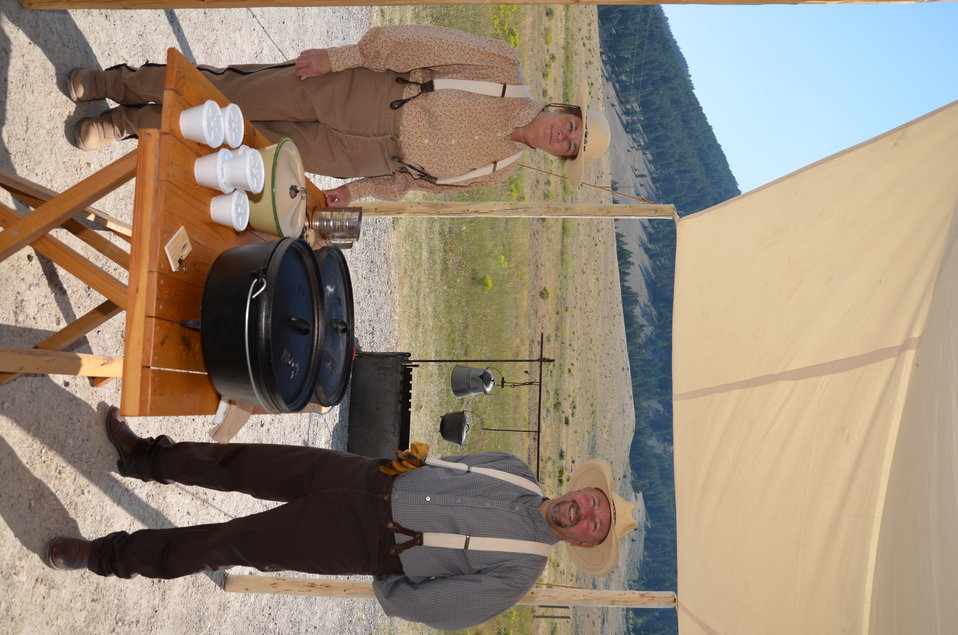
Cordial Western Chefs

Vicki and Joe Jones from Western Range Catering led a chuckwagon cooking demonstration at the Historic Miller House during the National Elk Refuge's centennial weekend. They provided samples to all who visited.

Credit: USFWS / Bobby Harkey, National Elk Refuge volunteer